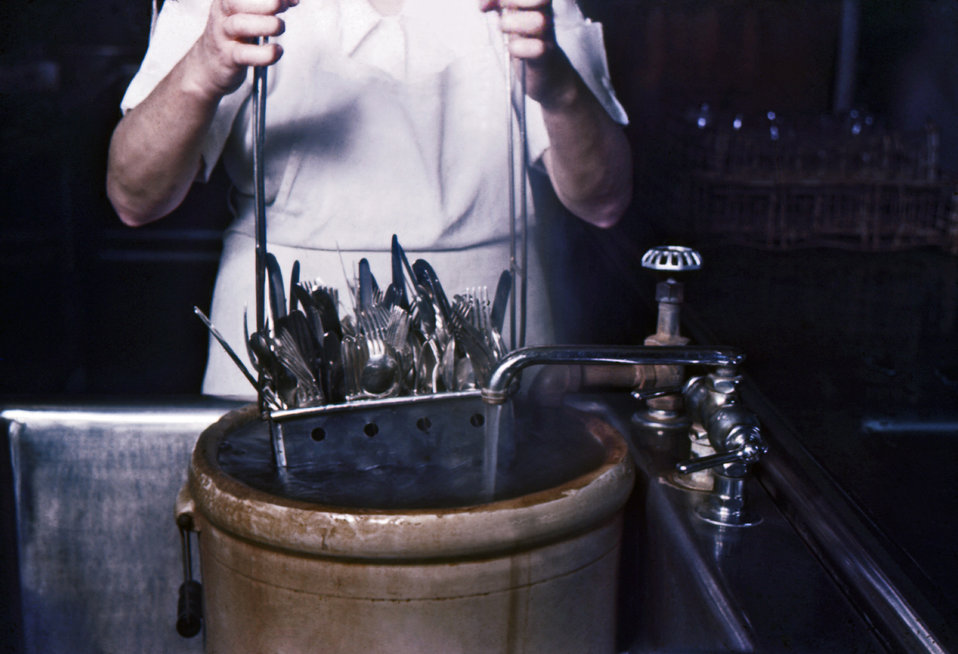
Shot in the 1950s, this image depicted a restaurant worker who was using a dip basket in order to wash restaurant utensils. The apparatus was an advance in sanitation, for it made the washing, rinsing, and sterilization of utensils possible without the sanitizer's hands coming into contact with the implements, thereby, avoiding contamination.